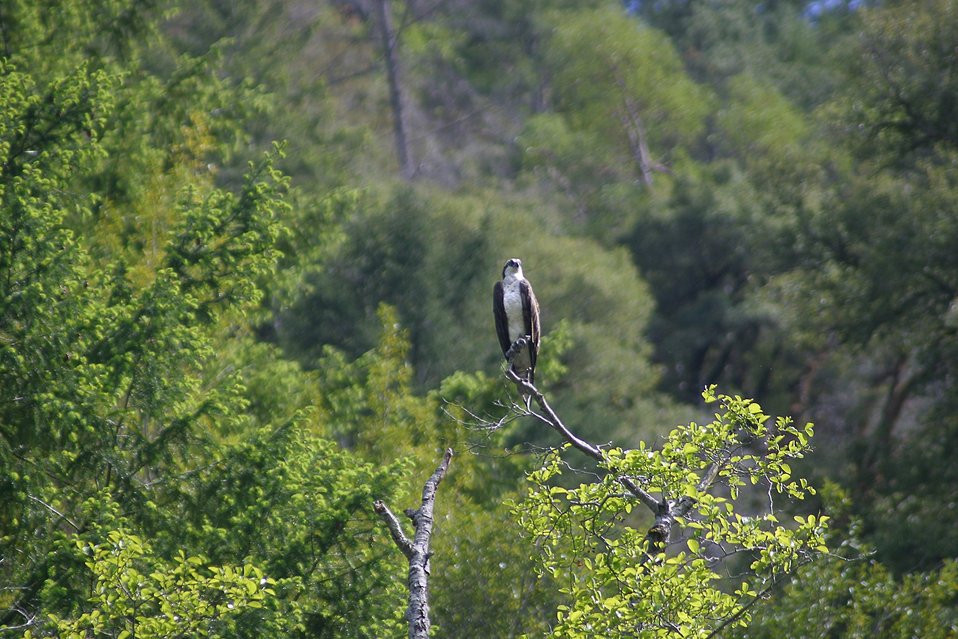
Wild section of the Rogue River from Grave Creek to Foster Bar. 3100 cfs at Grants Pass and 5300 at Agness.